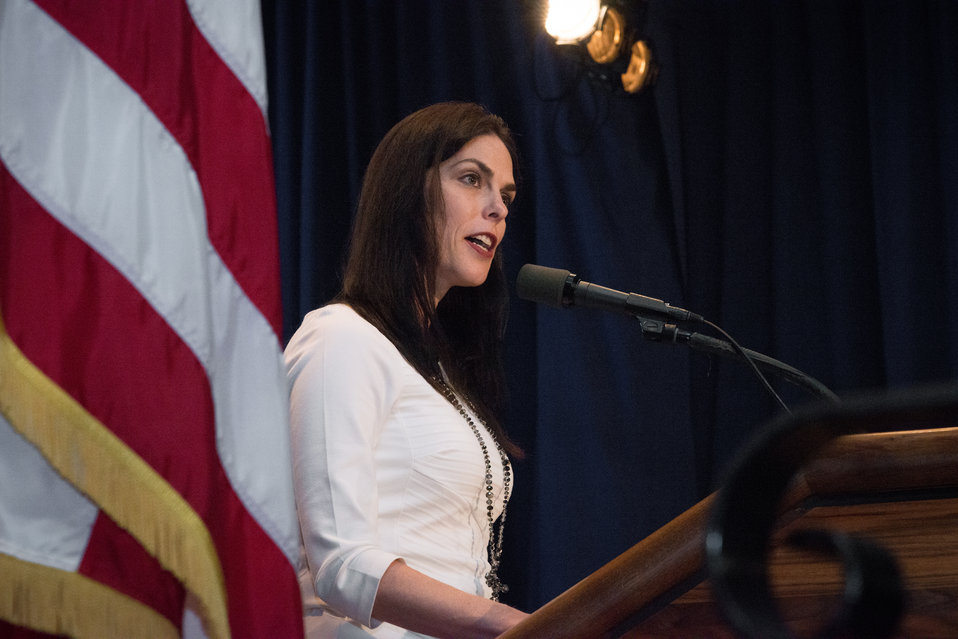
Borlaug Institute for International Agriculture at Texas A and M Director of External Relations and granddaughter of Dr. Norman Borlaug, Julie Borlaug moderates the Borlaug Symposium commemorating the late Dr. Borlaug's 100th Birthday in Jefferson Auditorium of the U.S. Department of Agriculture (USDA) in Washington, D.C. on Tuesday, Mar. 25, 2014. The symposium highlights current efforts addressing global hunger. Panels will feature high school and university students, as well as, scientists and policy advisors at U.S. Agency for International Development (USAID), USDA and Non-Governmental Organizations (NGO). Questions from students and interns are given priority to panelists. Lightening presentations will have leading students and individuals present what they are doing to help achieve Dr. Borlaug’s vision of creating the next generation of hunger fighters. The symposium was planned in partnership with: USAID, Cornell University, Iowa State University, University of Minnesota, The Norman Borlaug Institute for International Agriculture, Texas A and M University, and the World Food Prize.